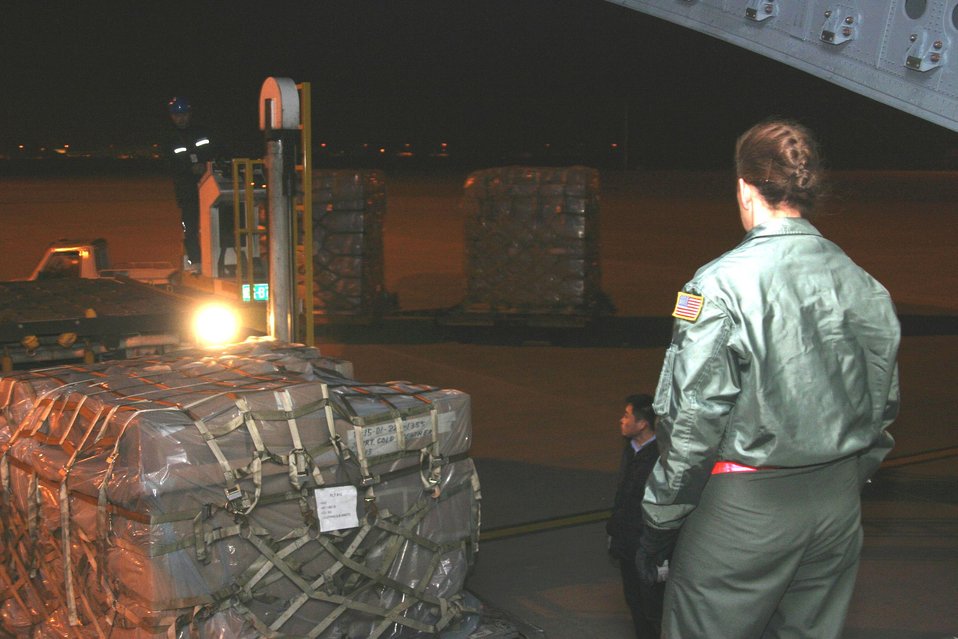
Air Force delivers humanitarian supplies to China

U.S. Air Force Senior Master Sgt. Jeanette King, 535th Airlift Squadron, 15th Airlift Wing, Hickam Air Force Base, Hawaii, directs the off-loading of a pallet of humanitarian relief supplies from a C-17 Globemaster III. Two C-17's, one from 15 AW, Hickam AFB, and the other from the 3rd Wing, Elmendorf Air Force Base, Alaska assisted in the deliver. Thirteenth Air Force's 613th Air and Space Operations Center Air Mobility Divsion at Hickam AFB coordinated the delivery of 225,890 pounds of relief supplies to Shanghai within 18 hours of Secretary of Defense approval. Recently, 19 Chinese provinces experienced the most severe winter storms in 50 years, imposing severe hardships on millions of Chinese citizens.